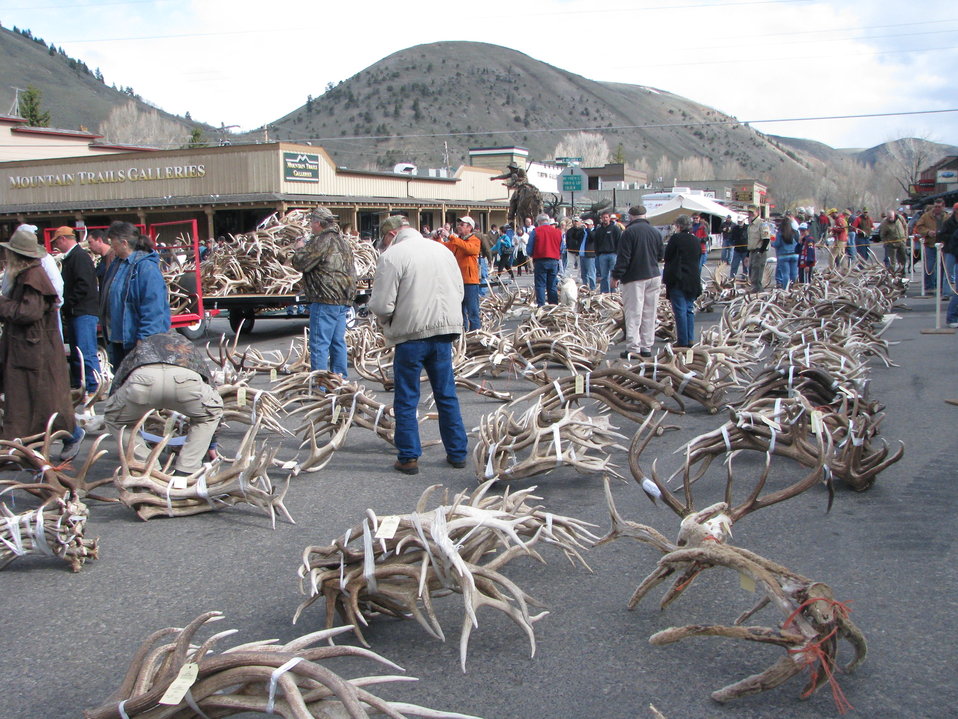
Prospective Bidders Preview Antler Bundles

Scout leaders lay the bundles out on the east side of Jackson's Town Square early on the morning of the auction. Prospective bidders and spectators have a chance to preview the lots prior to the start of the auction.